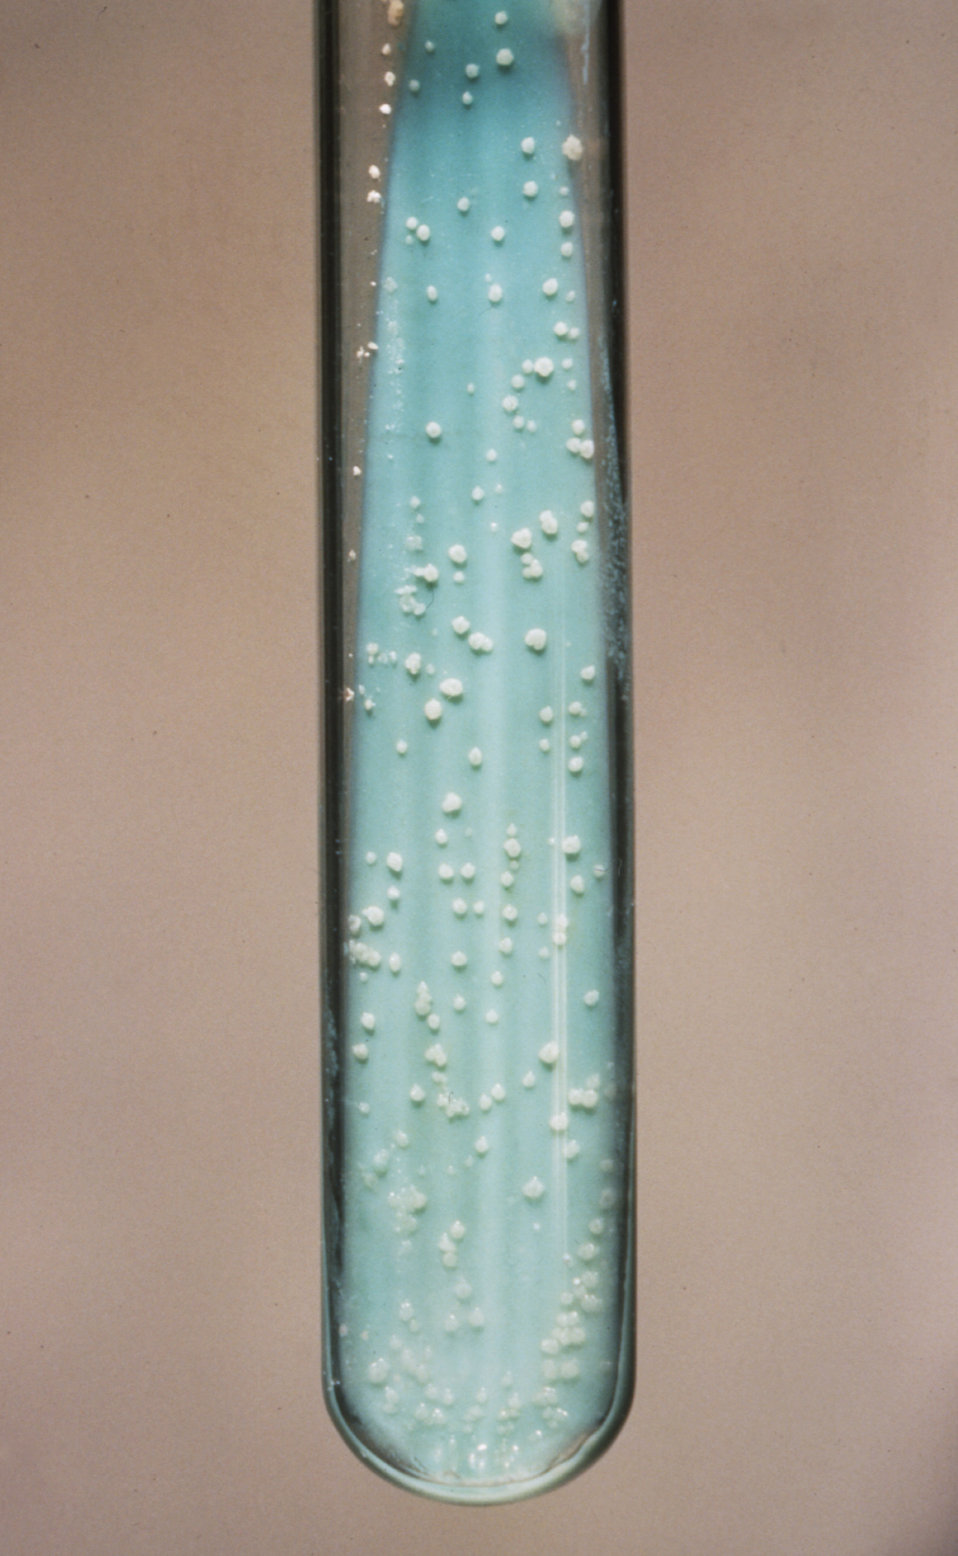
This is a Lowenstein-Jensen medium culture tube growing Blastomyces dermatitidis or Ajellomyces dermatitidis.